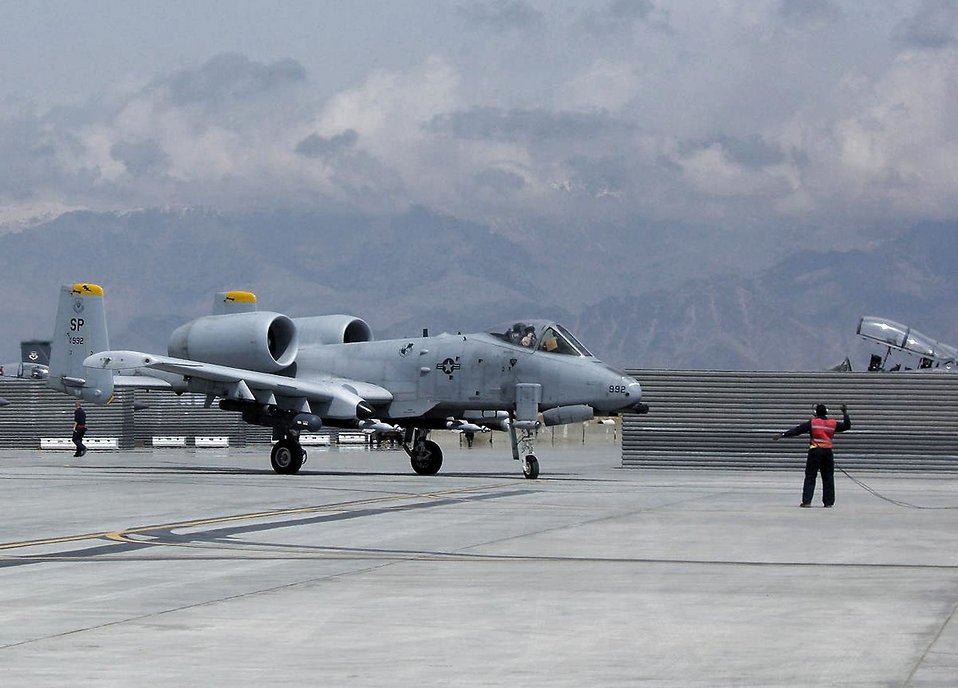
Keeping the A-10 fit to fight

Senior Airman Troy Brown marshals an A-10 Thunderbolt II into a special area at Bagram Air Base, Afghanistan, for de-arming after a combat sortie. Airman Brown, assigned to the 81st Expeditionary Aircraft Maintenance Unit, is deployed from Spangdahlem Air Base, Germany.